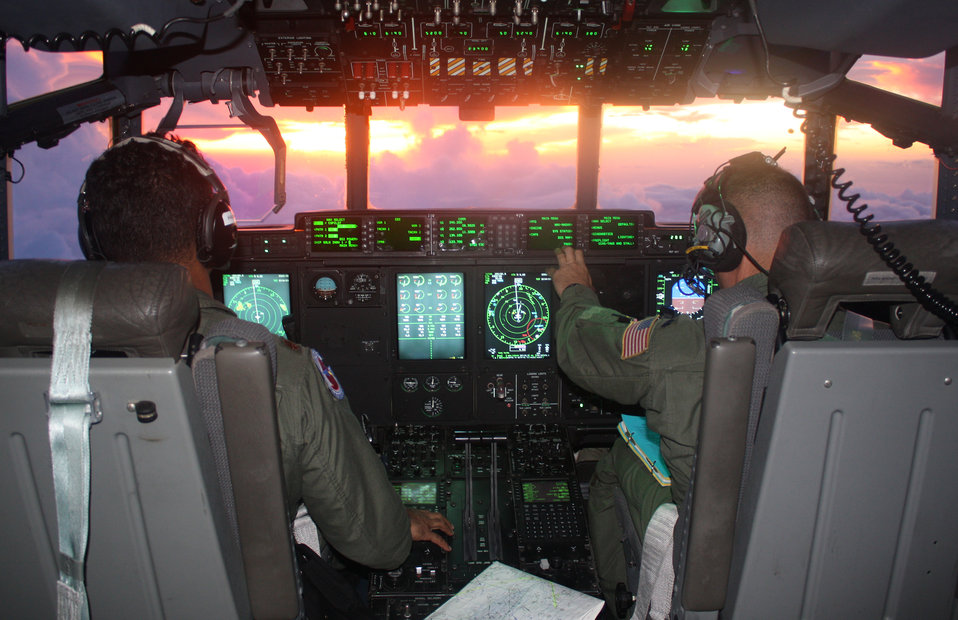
Hurricane Hunters patrol Gustav

Maj. J.D. Haig (left) and Lt. Col. Troy Anderson, 53rd Weather Reconnaissance Squadron Hurricane Hunters from Keesler Air Force Base, Miss., patrol what was then still Tropical Storm Gustav Aug. 27. The Hurricane Hunters are the only operational unit in the world flying weather reconnaissance on a routine basis. They provide surveillance of tropical storms and hurricanes in the Atlantic, Caribbean, Gulf of Mexico and Central Pacific for the National Hurricane Center.